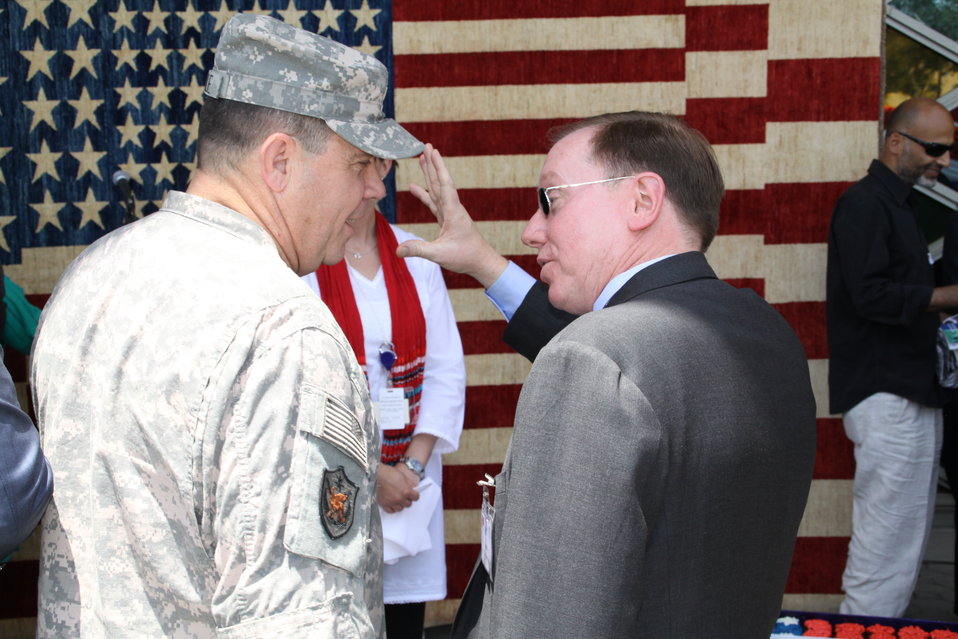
Kabul Official July 4th Celebration